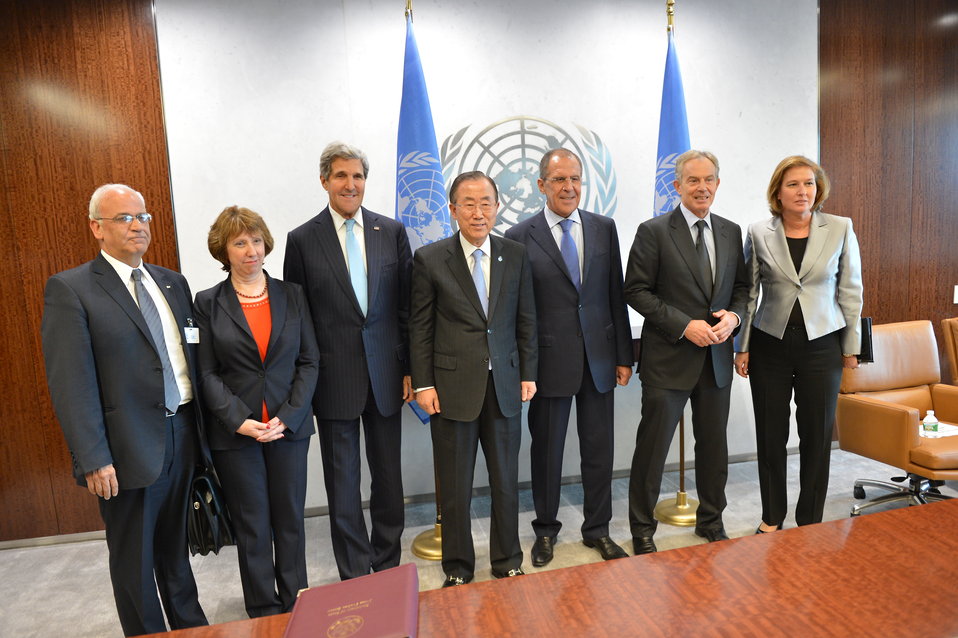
Secretary Kerry at the Quartet Ministerial

U.S. Secretary of State John Kerry participates in a Quartet Ministerial in New York City on September 27, 2013.